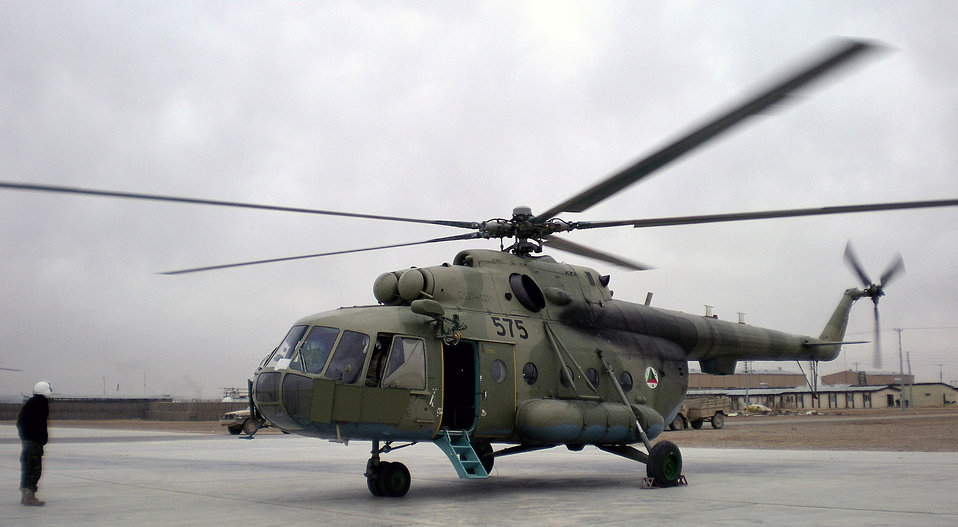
Airmen advise Afghans on Russian-made helicopters

An MI-17 transport helicopter operates from Kandahar Air Base, Afghanistan. Tech. Sgts. Dennis Flanagan and Brian Roberts are mentoring Afghan air corps maintainers on the Russian-made helicopter. Both Airmen are assigned to the 718th Aircraft Maintenance Squadron from Kadena Air Base, Japan.